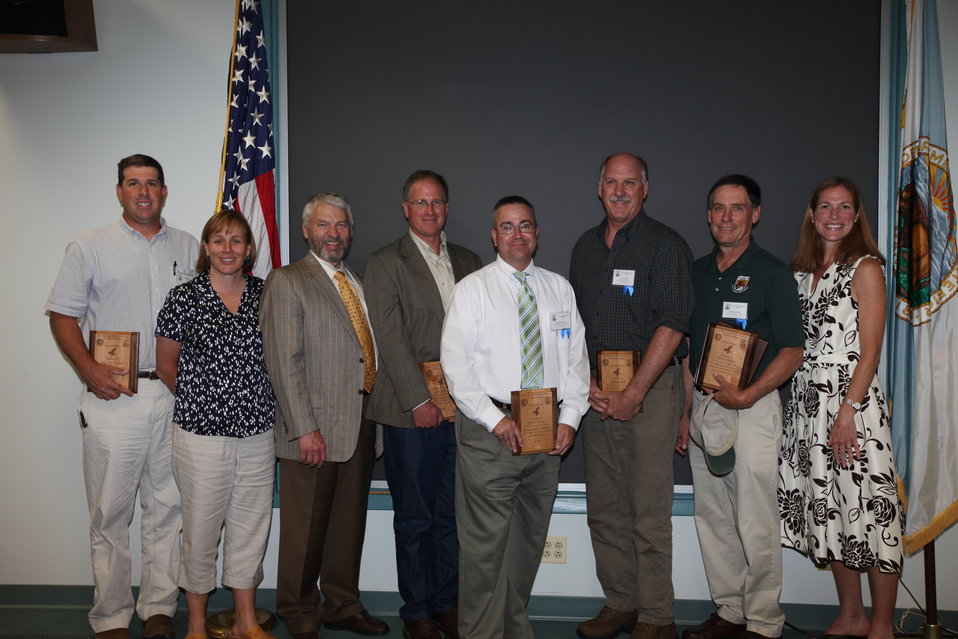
Regional 2011 Storm Season Restoration Crew

From left to right: Chris Smith, Deputy Regional Director Deb Rocque, Deputy Director Rowan Gould, Jed Wright, Mark Secrist, Steve Hill, Eric Derleth, Regional Director Wendi Weber